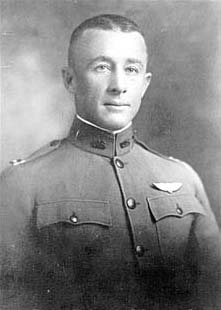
Colonel John A. Macready

EARLY YEARS -- John A. Macready, a Stanford University graduate who enlisted in the Air Service Branch of the Signal Corps in 1917, packed a pile of